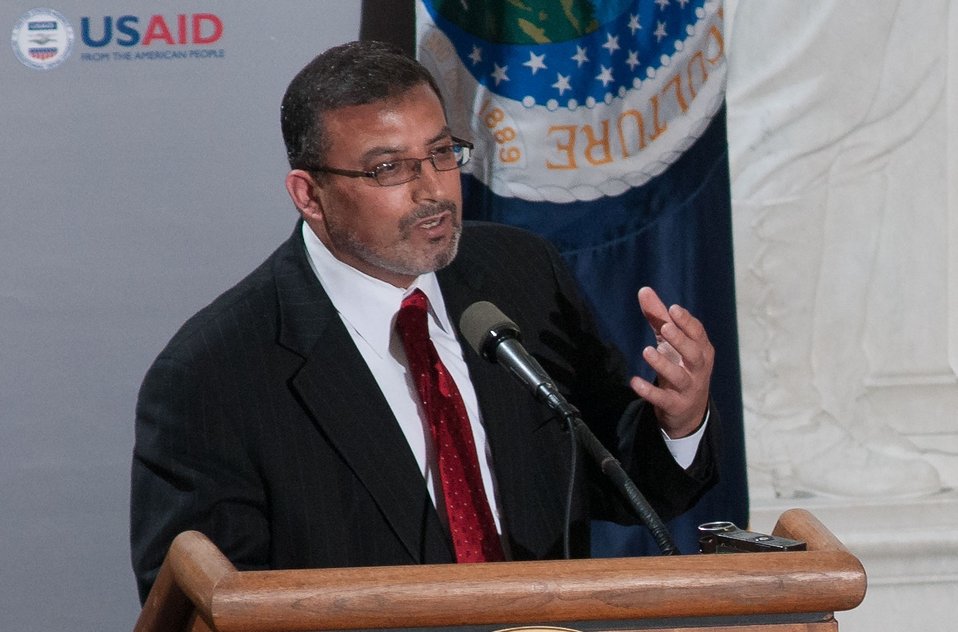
Islamic Relief USA CEO Abed Ayoub presents the reflection during the Iftar event, co-sponsored by the Iftar celebration, co-sponsored by the U.S. Department of Agriculture, U.S. Agency for International Development (USAID) and Islamic Relief USA, on Tuesday, August 7, 2012, in the USDA Whitten Building, in Washington, D.C. Ramadan is the month of fasting, intensive prayer, sacrifice and worship for Muslims around the world. Throughout this month, Muslims fast during the day, abstaining from consuming food from dawn to dusk and using this time to purify spiritually. Fasting reminds Muslims of the poverty and hunger suffered by many in the United States and worldwide. It is a connection with those who are hungry not through devotion, but through the many global factors that lead to hunger and famine. Iftar is the meal at which Muslims break their fast at sunset, usually by eating dates, according to the Prophetic tradition.